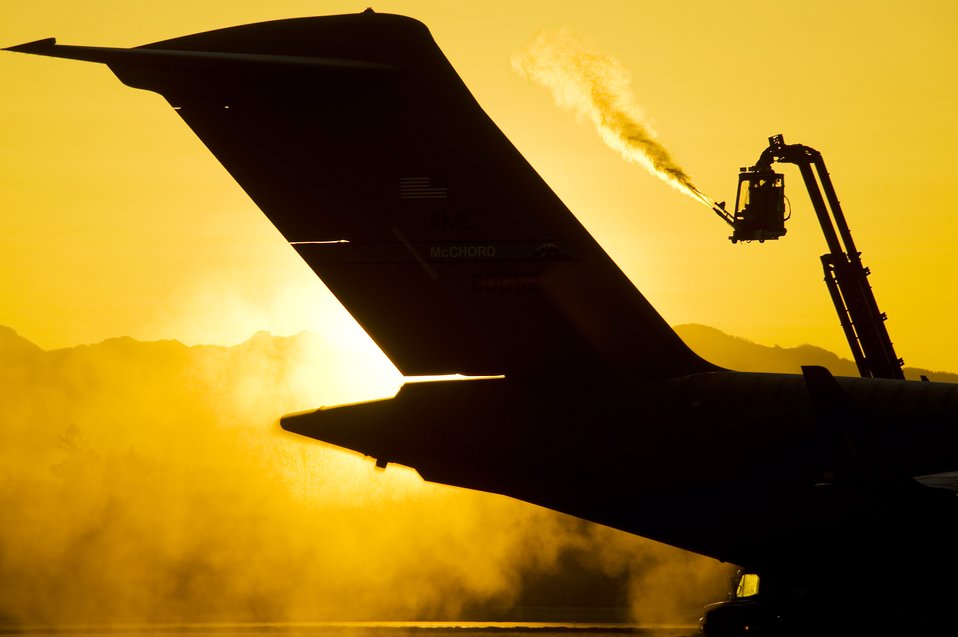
Mission possible

An Airman applies deicing fluid to the tail of a C-17 Globemaster III on the flightline at Joint Base Lewis-McChord, Wash., Feb. 22, 2010. Deicing provides protection against ice and snow buildup on critical control surfaces on the aircraft before launch. The Airman is assigned to the 62nd Aircraft Maintenance Squadron.